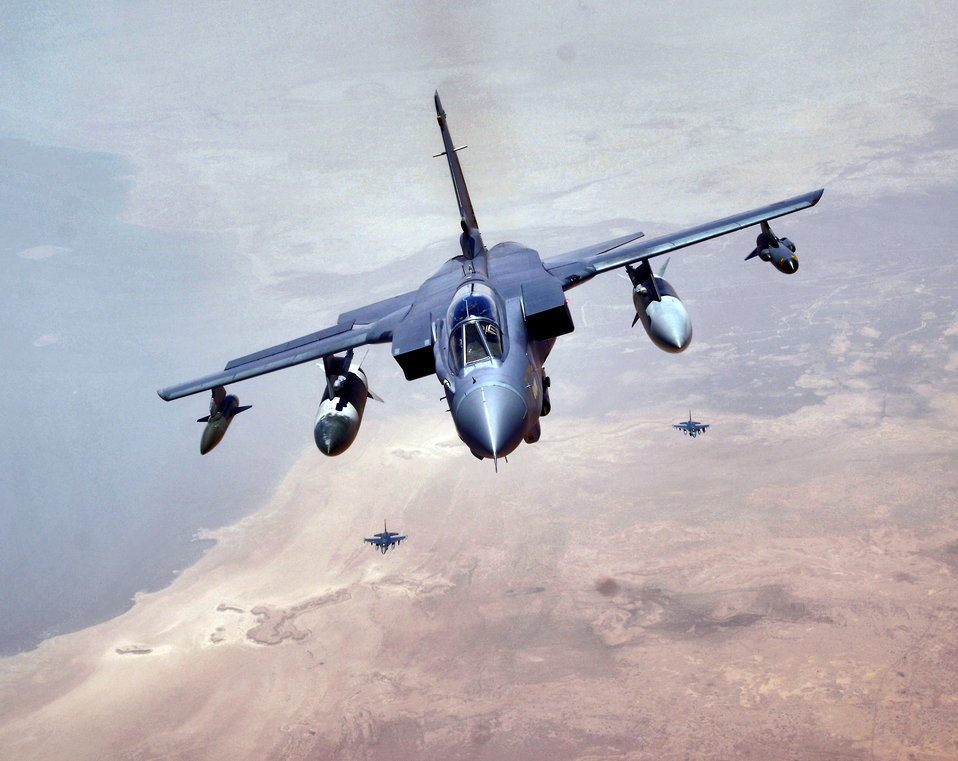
Tornado power

An RAF Tornado GR-4 positions itself behind a KC-135 Stratotanker for an air refueling on Sunday, May 14, 2006. The Tornado and crew are from the 617th Squadron at RAF Lossiemouth, Scotland. In the distance, two F-16 Fighting Falcons from the Air National Guard's 177th Fighter Wing in Atlantic City, N.J., await their